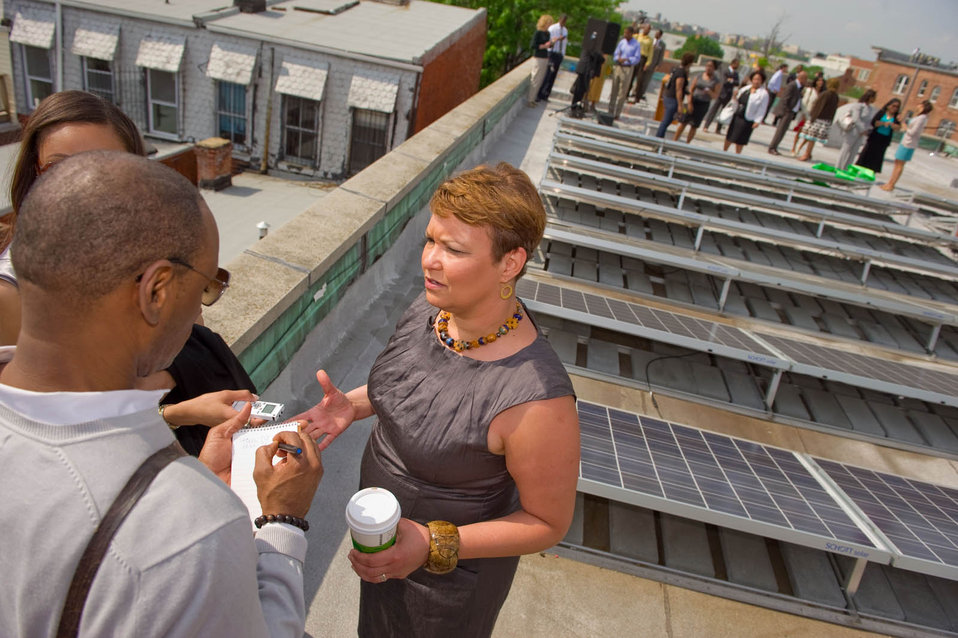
2011-05-03 FlaAveSolar 035